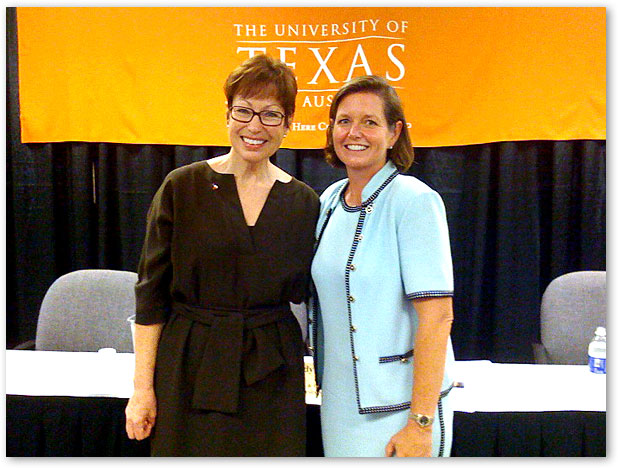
Baker Field2

Commissioner Baker - The University of Texas Distance Learning Center, 9-21-09